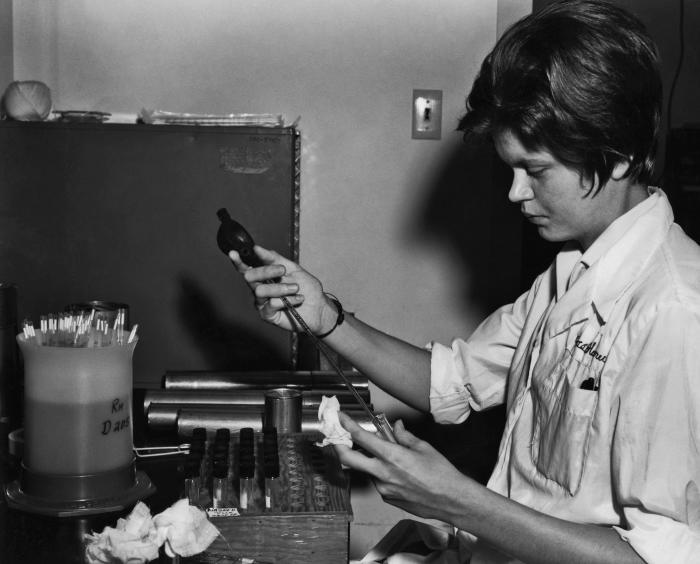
Rebecca Harwell, a former Centers for Disease Control microbiologist in the Respiratory Virus Infections Unit, was shown in this 1968 photograph inoculating a tissue culture in hopes of isolating influenza virions from a throat swab.